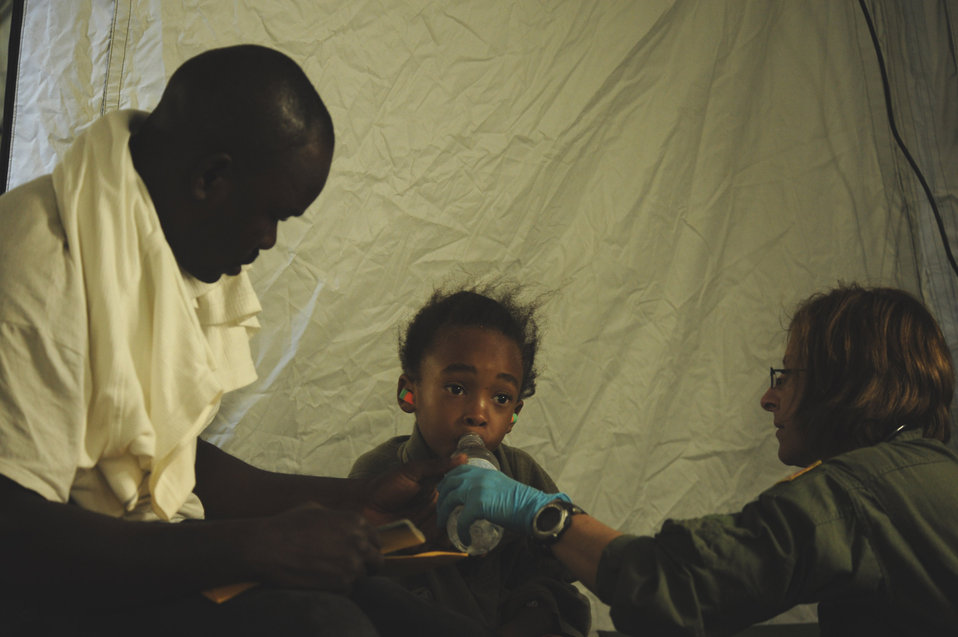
AFSOC pararescuemen work to save lives

A six-year-old Haitian boy is given water by Tech. Sgt. Patricia Wilson, with the 1st Special Operations Support Squadron at Pope Air Force Base, N.C., at the Toussaint L'Ouverture International Airport in Port-au-Prince, Haiti, Jan. 19, 2010. Later,the boy was airlifted to a hospital in southern Florida.